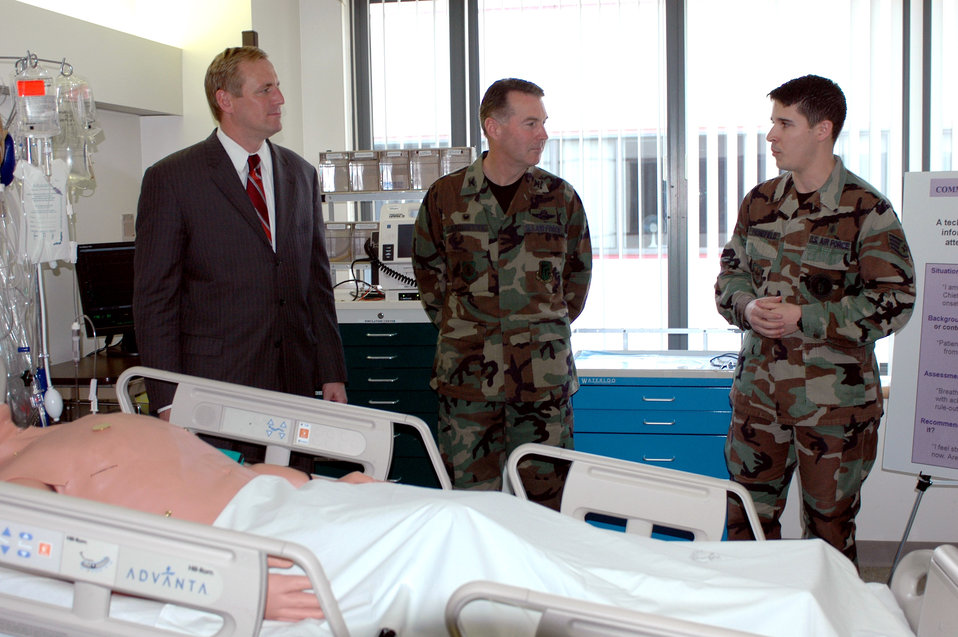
Travis medical center recognized by California legislature

Staff Sgt. Ivan Fronefield explains to California State Senator Jeff Denham (R-Merced) and Col. Steve Arquiette, 60th Air Mobility Wing commander, why standardization is a vital training tool for the David Grant USAF Medical Center medical staff at Travis Air Force Base, Calif. The senator came March 1 to present California Senate Concurrent Resolution 122, which recognizes DGMC as an important segment of America's Armed Forces and for the contributions they have made to world peace, America's freedom and the way of life enjoyed by the people of the state of California. Sergeant Fronefield is a Sim Center technician for the 60th Medical Operations Squadron.